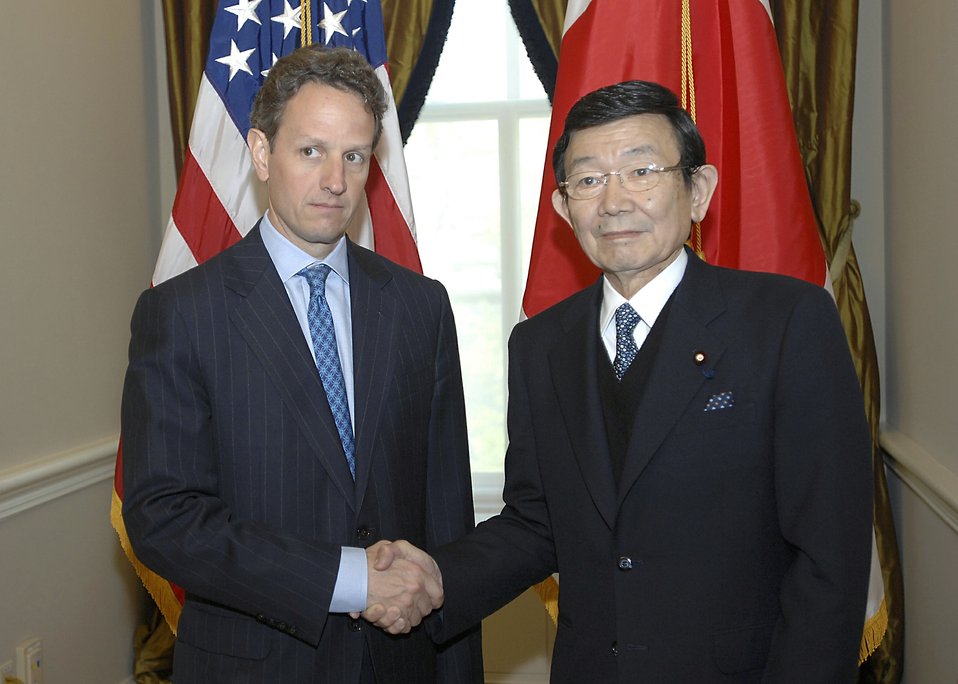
Japanese Finance Minister Yosano

On April 24, 2009, Secretary Geithner conducted a bilateral meeting at Treasury with Japanese Finance Minister Yosano.